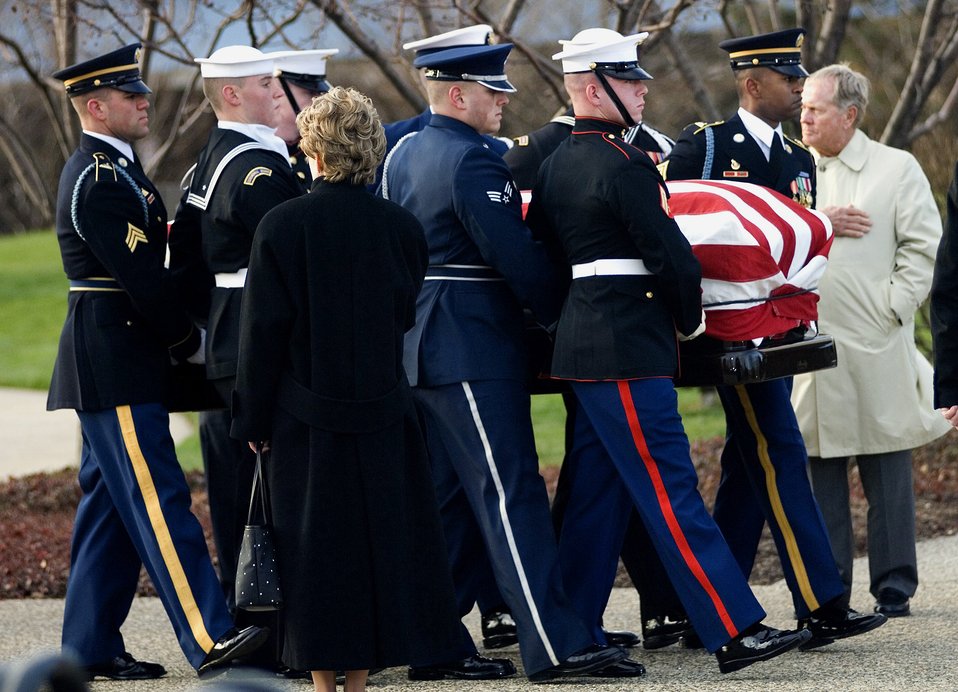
Honor Guard gives President Ford final honors

Armed Forces body bearers carry President Gerald R. Ford into the the Gerald R. Ford Presidential Library and Museum during the funeral service Jan. 2 in Grand Rapids, Mich.